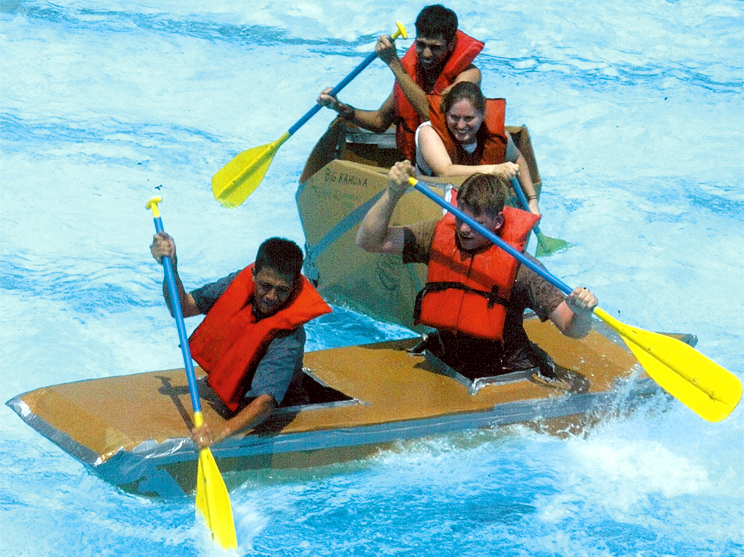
Sink or swim

POPE AIR FORCE BASE, N.C. -- Senior Airman Rachel Davis and Airman 1st Class Louis Torres of the 43rd Airlift Wing's command post try to out-paddle the 43rd Mission Support Squadron team. During the event, Airmen from each squadron race a boat made of cardboard and duct tape.